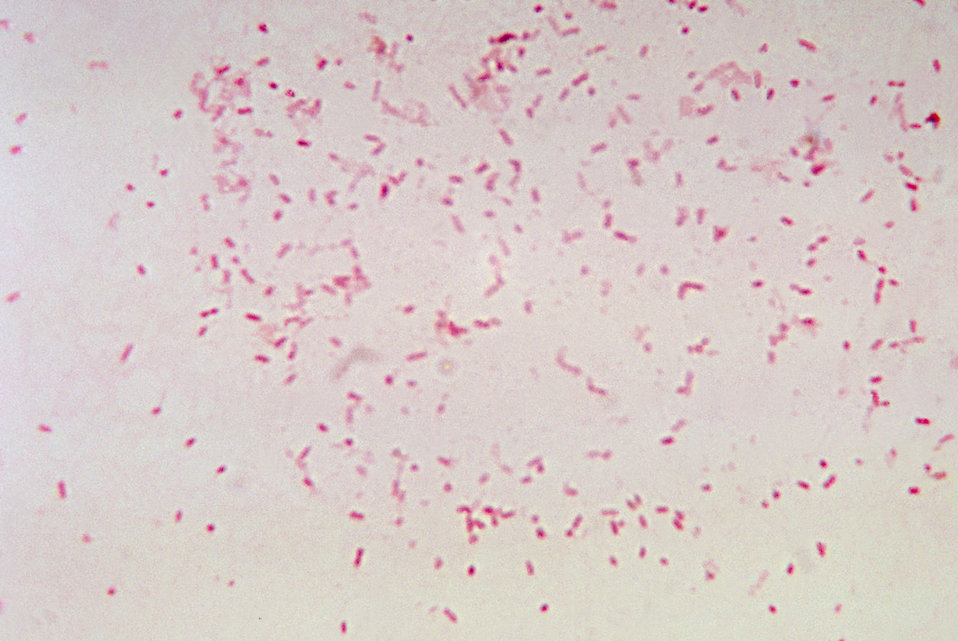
This photomicrograph shows Bacteroides fragilis ss. vulgatus after being cultured in a thioglycollate medium for 48 hours.